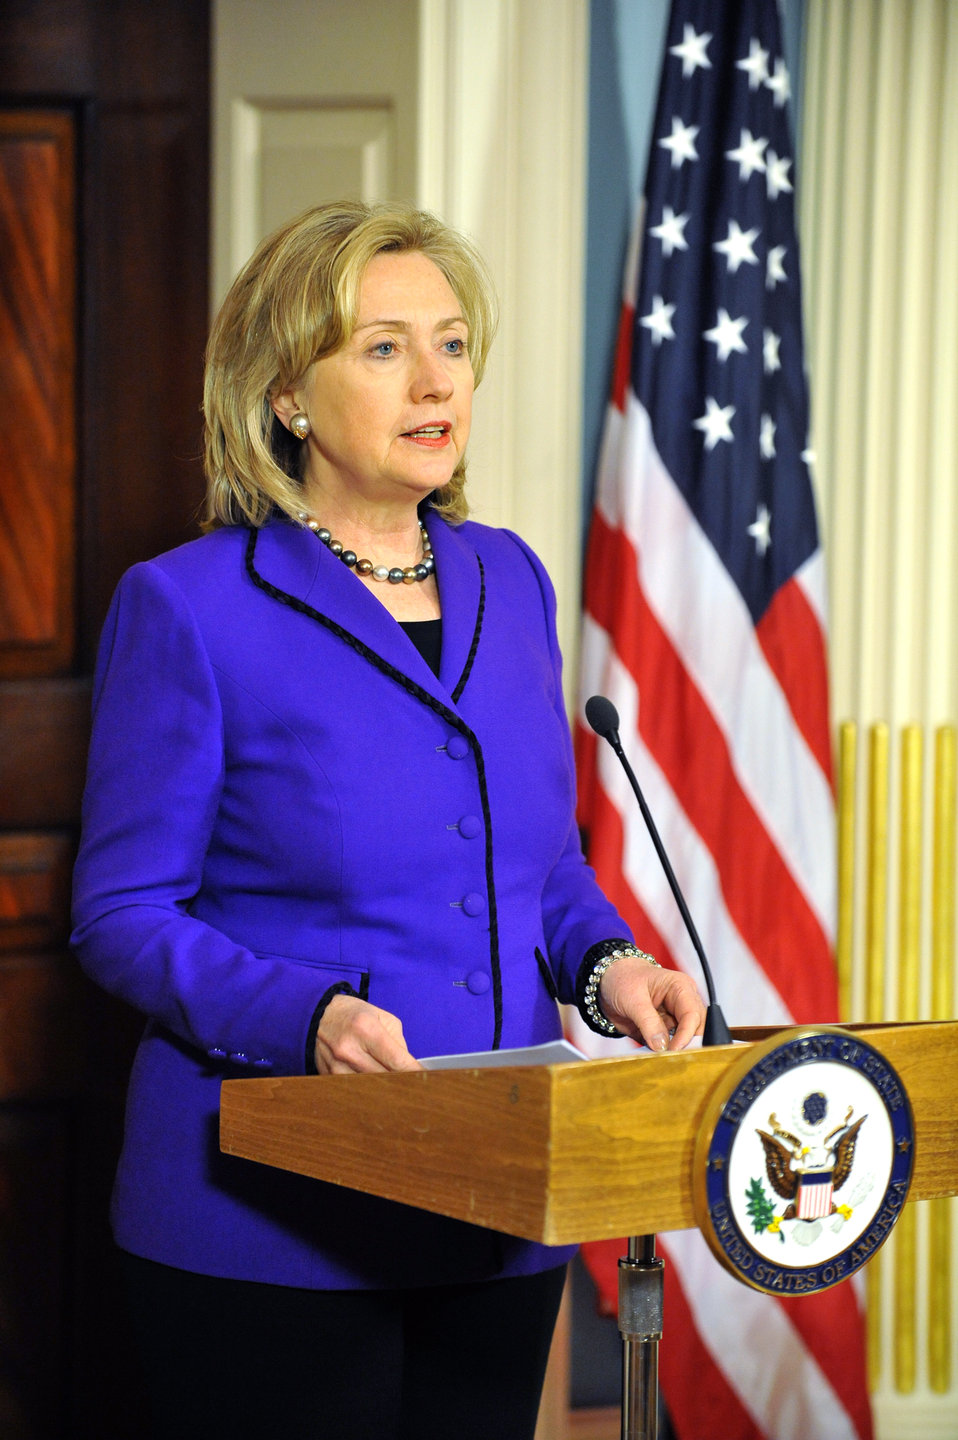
Secretary Clinton Makes a Press Announcement

U.S. Secretary of State Hillary Rodham Clinton makes a press announcement in the Treaty Room, at the U.S. Department of State in Washington, D.C., on March 24, 2011.